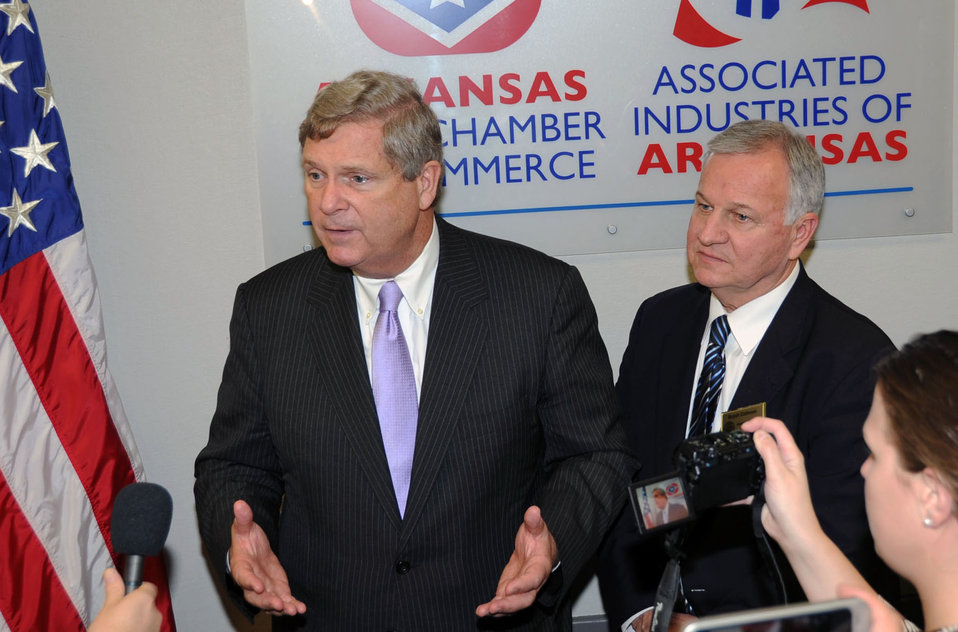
Agriculture Secretary Tom Vilsack (left), with Arkansas Secretary of Agriculture Butch Calhoun speaking at a press conference following an agriculture producers roundtable held at the Arkansas State Chamber of Commerce in Little Rock, AR, on Wednesday, Oct. 30, 2013.